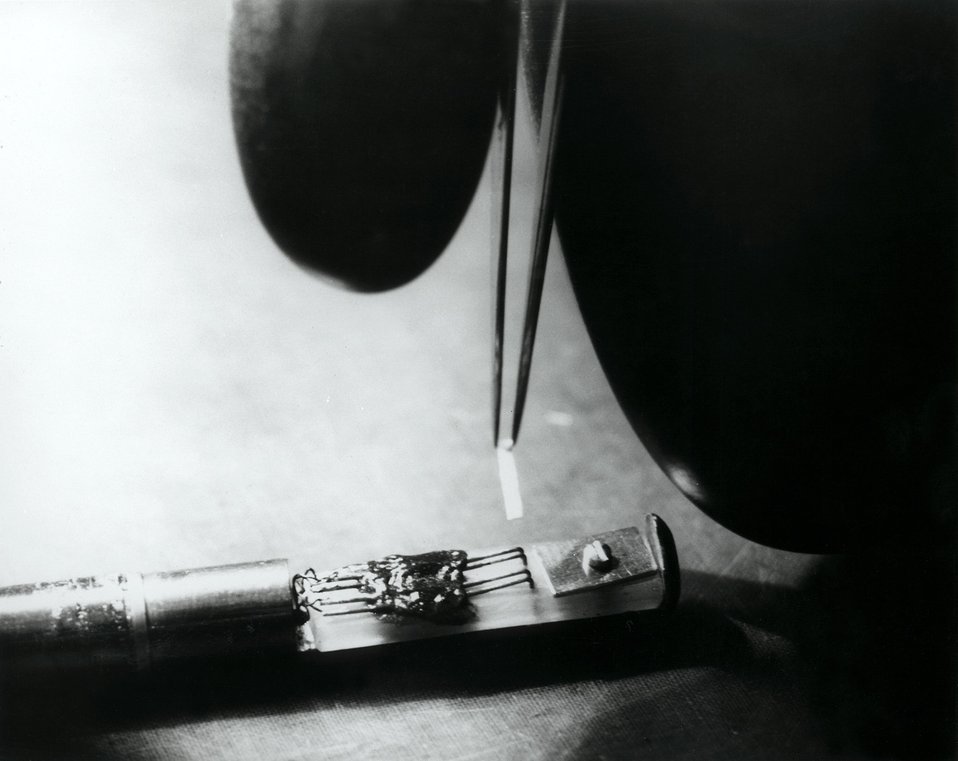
In this photo, a plutonium sample is shown being loaded into a sample holder for measuring electrical resistivity at very low temperature.
c.1971